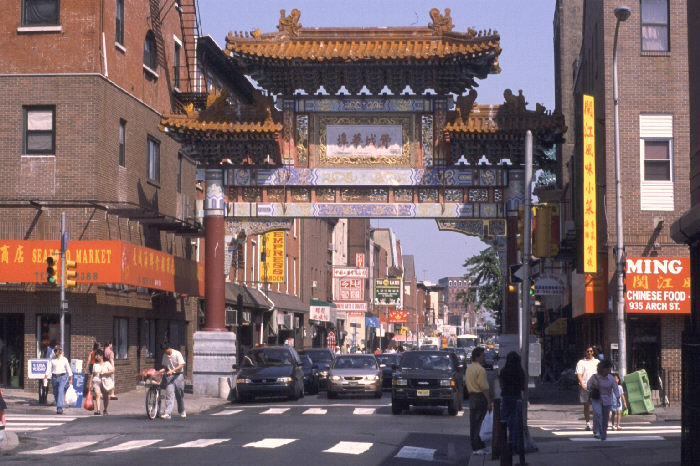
Chinatown district of Philadelphia, Pennsylvania.